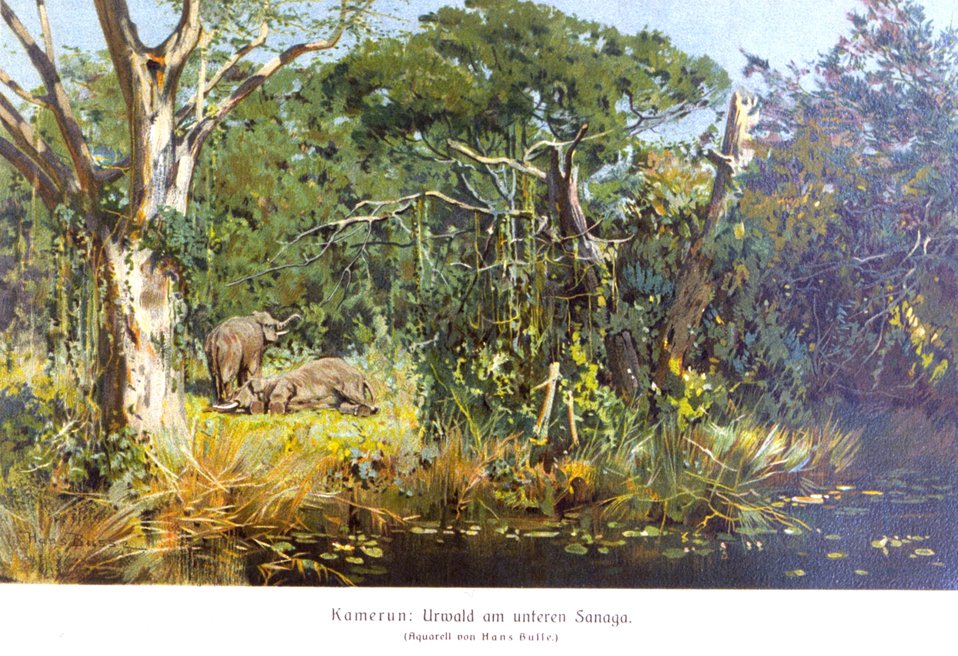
Cameroon German colony - a view of elephants in the forest. In: 'Das Deutsche Kolonialreich,' by Hans Meyer, 1909. Vol I, p. 442. Library Call Number: Cfd M612 d